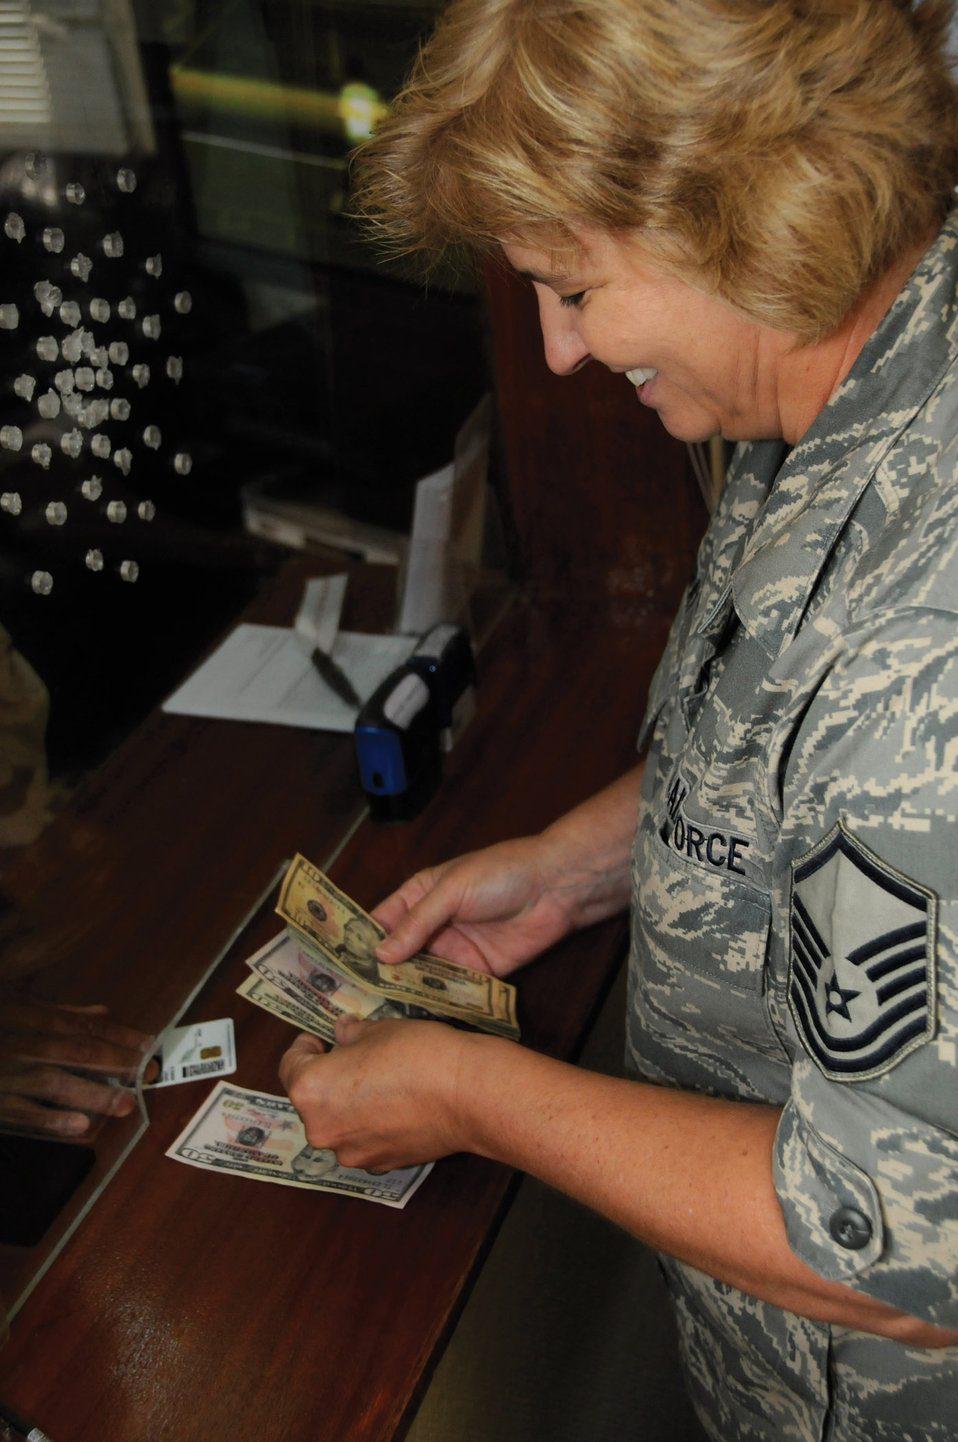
Moving the money behind the mission

Master Sgt. Anna Gray cashes a check for a customer in Southwest Asia Sept. 8. The 379th Expeditionary Comptroller Squadron finance section cashes checks and exchanges currency for those here and handles pay entitlements for the entire area of responsibility. Last month the section helped about 4,900 customers. The squadron also manages the 379th Air Expeditionary Wing's $94.7 million budget. Sergeant Gray is a cashier for the 379th ECPTS.